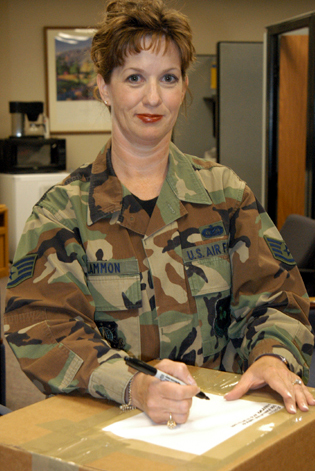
Spirit of Service

SCHRIEVER AIR FORCE BASE, Colo. -- Staff Sgt. Catherin Lammon has earned the 2004 American Legion Spirit of Service award for her continued role in the community as a volunteer. She is assigned to the 50th Operations Group here.